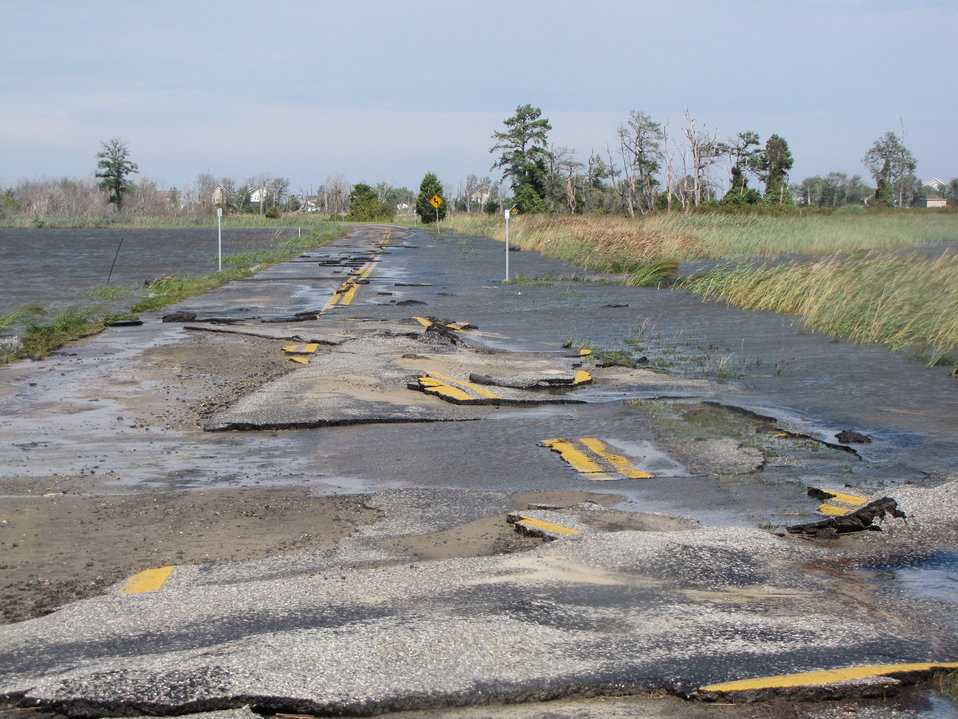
Damaged road at Prime Hook

Flood damage from Hurricane Irene at Prime Hook National Wildlife Refuge in Delaware.